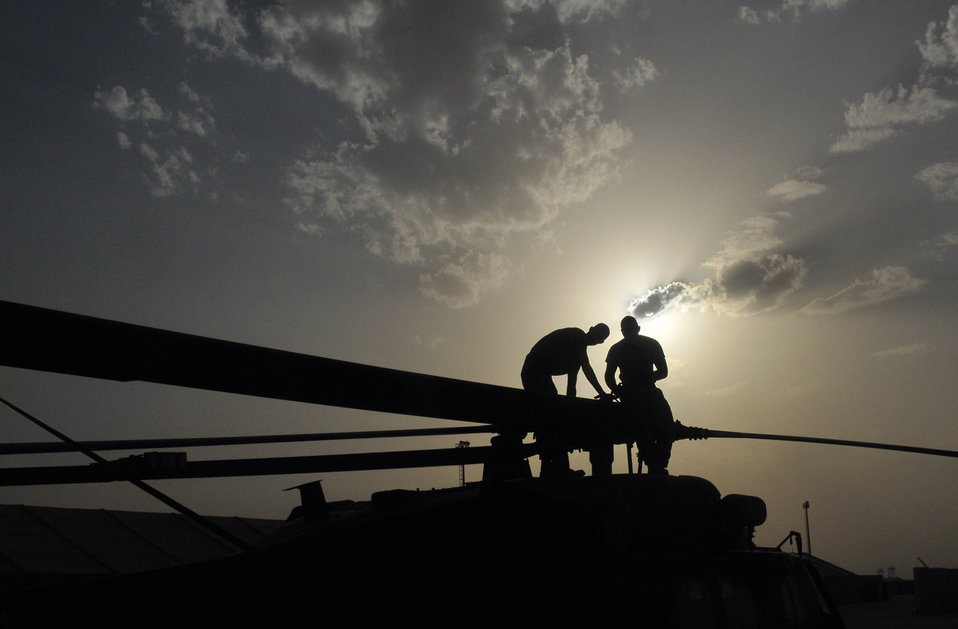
Moving HH-60 Pave Hawks

Airman 1st Class Tyler Lecates (left) and Staff Sgt. Michael Burch prepare a HH-60 Pave Hawk main rotor for blade alignment Aug. 12, 2010 at Joint Base Balad, Iraq. Airmen Lecates and Sergeant Burch are maintainers with the 332nd Expeditionary Aircraft Maintenance Squadron.